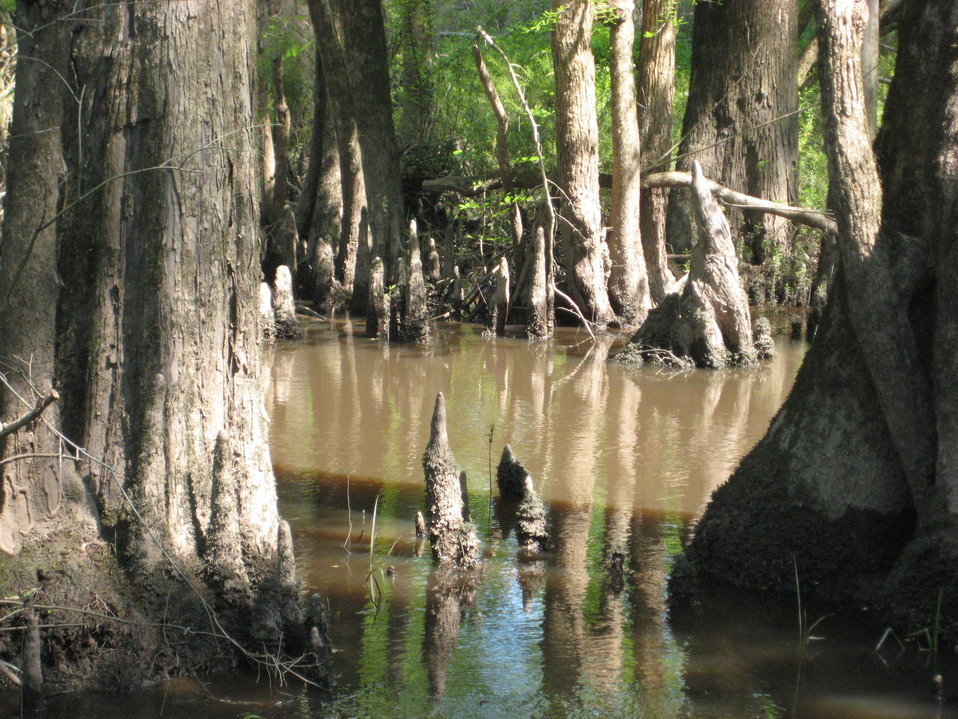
Dearman Big Creek

Herman Murrah Preserve in Mississippi. Supported by the North American Wetlands Conservation Act.